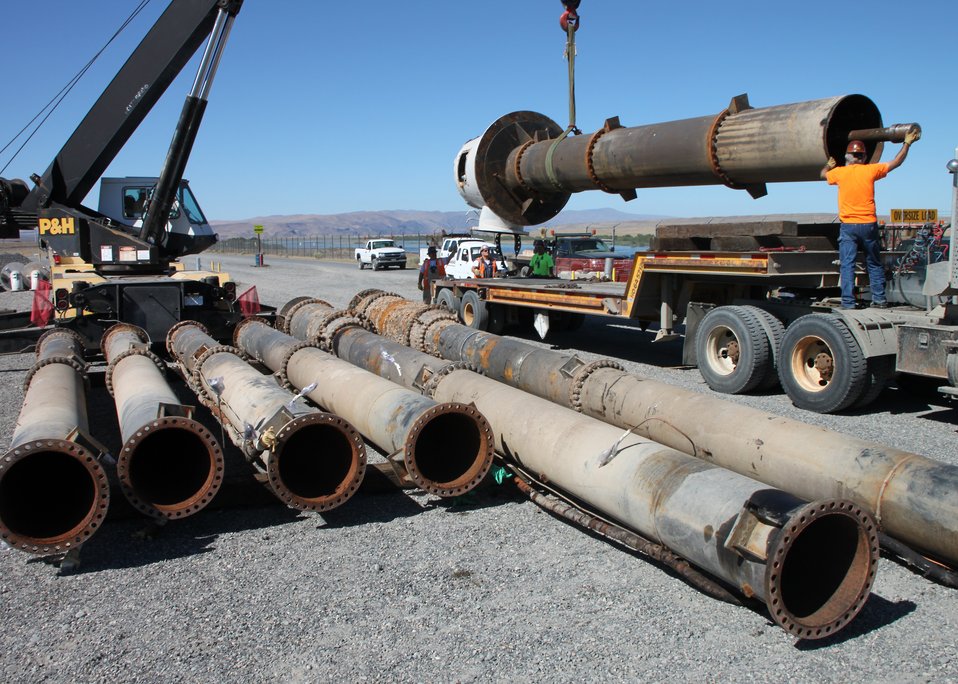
Richland demolitions

Workers load a section of a pump from one of two river pump houses workers demolished along the Columbia River shore.